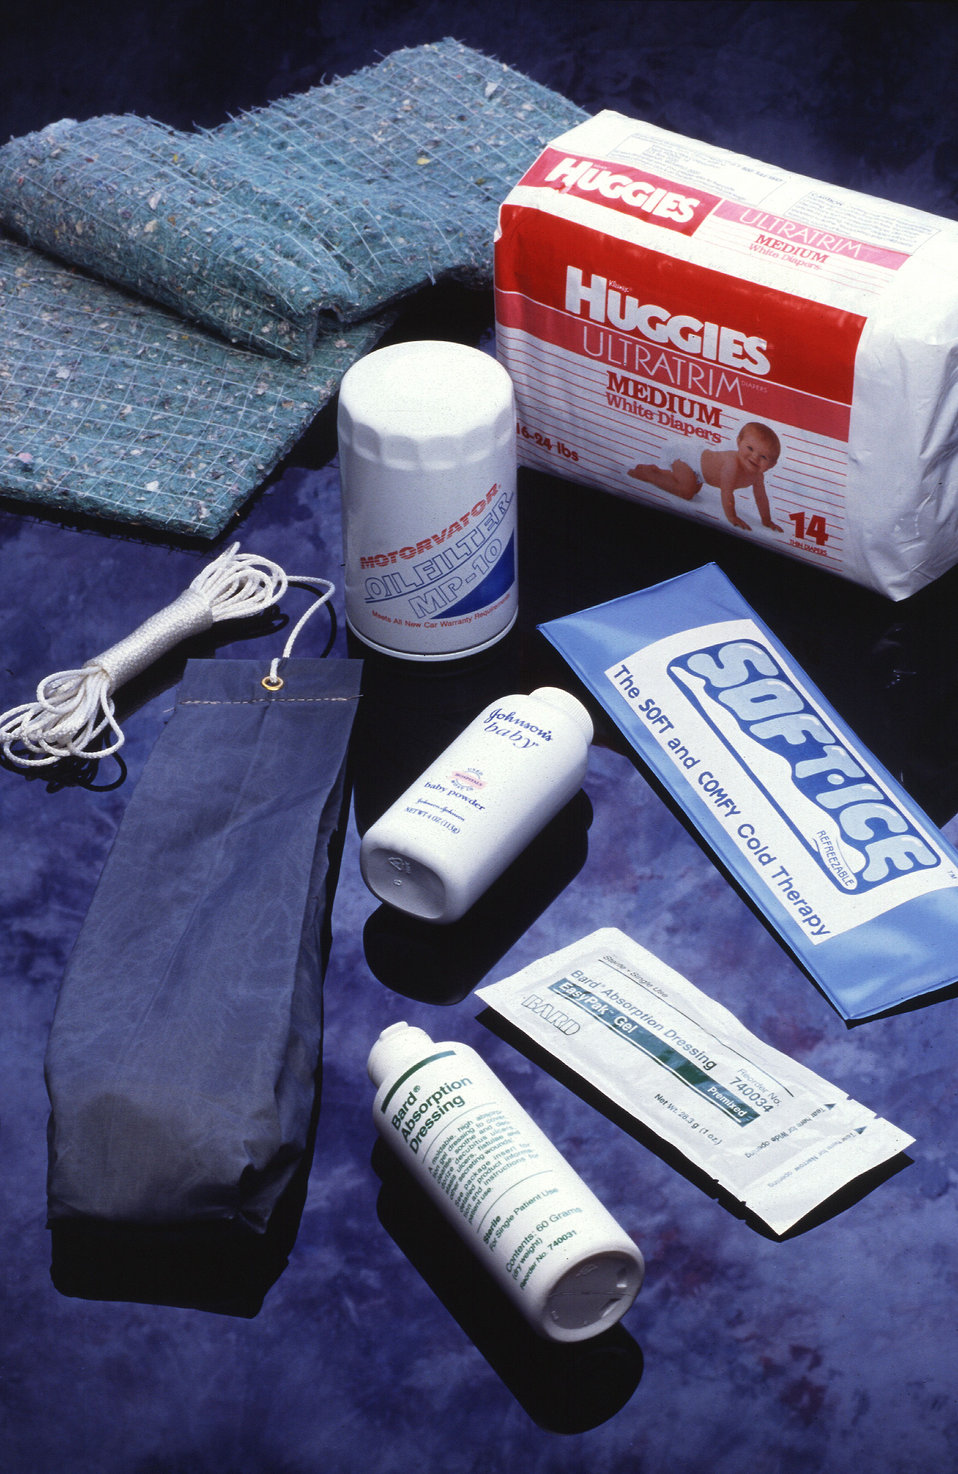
Starch is the main constituent of grain flours, and the most plentiful starch is cornstarch. Although most of the products from corn milling go into food and feed, 4.5 billion pounds are used in the paperboard, paper, and related industries, where starch serves both as an adhesive and a coating. New uses for cornstarch continue to be discovered, for example, when U.S. Department of Agriculture (USDA) Agriculture Research Service (ARS) scientists married starch to a synthetic chemical, they managed to create a product so thirsty, it could absorb hundreds of times its own weight in water. Someone called it SuperSlurper, and the name stuck. After patents were secured in 1976, SuperSlurper started popping up all over the marketplace. The absorbent compound, which can slurp up to 2,000 times its weight in water, is used as an electrical conductor in batteries. You can find it in fuel filters, baby powders, and wound dressings. Compounds very much like it are now used in disposable diapers and sanitary napkins.